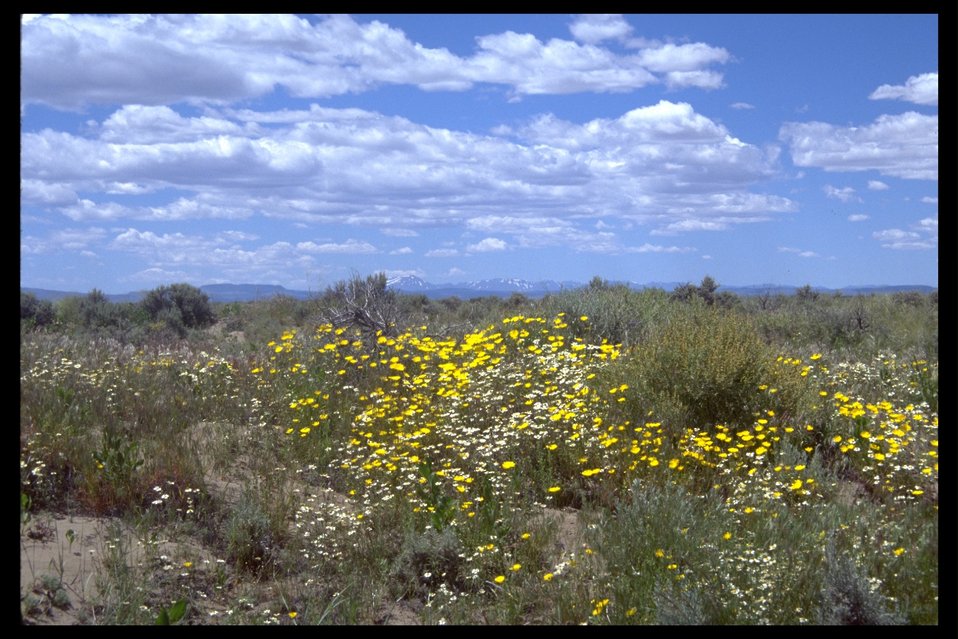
Alvord Desert WSA with wild flowers in the foreground. (WSA 2-74)